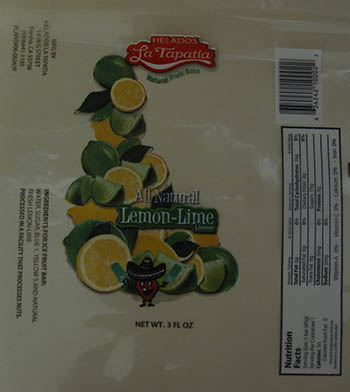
RECALLED – Ice cream productsAll Natural Lemon-Lime

March 19, 2014 – Product Recall – Helados La Tapatia, Inc. Recalls Products Because of Possible Health Risk.